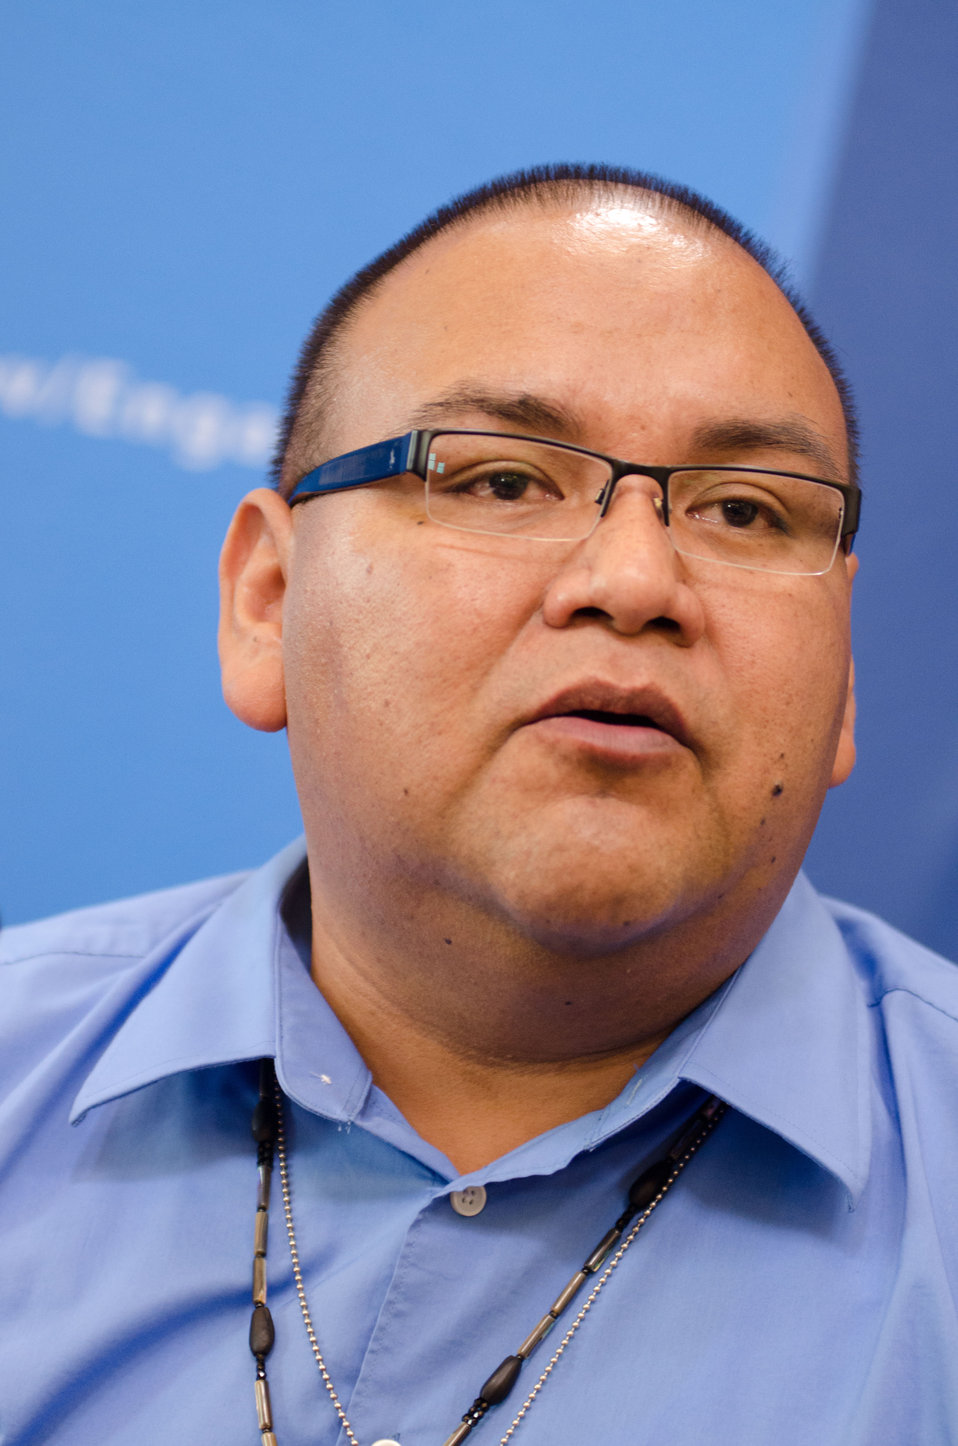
Tohono O’odham Community Action Co-Founder and President Terrol Johnson is one of eleven honorees recognized for their efforts to reduce hunger and increase food security in the U.S. and internationally at the White House Champions of Change Strengthening Food Security at Home and Abroad Event held at the White House on Thursday, September 6, 2012, in Washington, D.C.